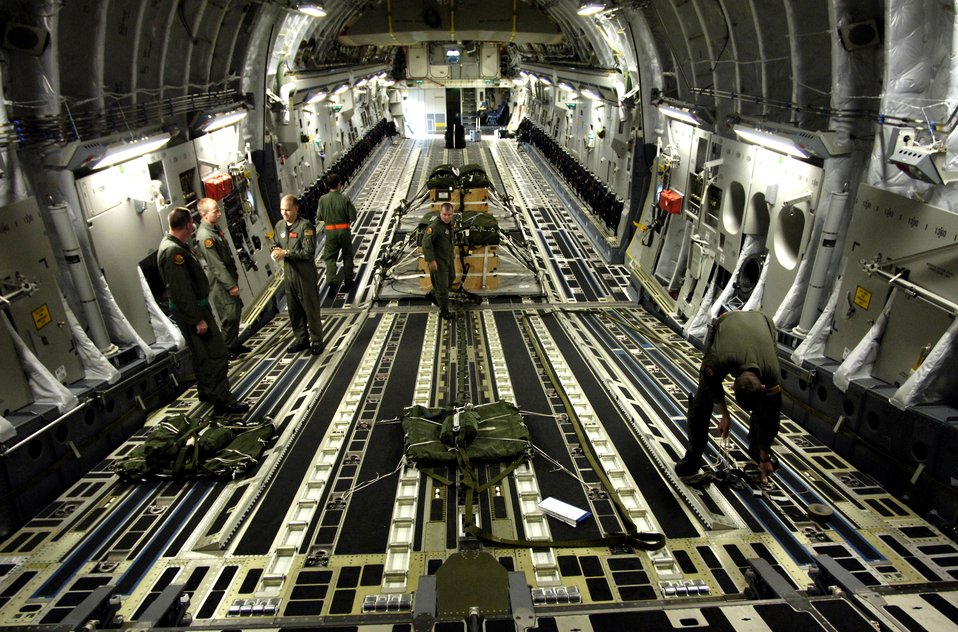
C-17 airdrop training mission

C-17 Globemaster III aircrew members prepare the rigging for parachutes for an upcoming airdrop training mission May 16, 2006, at Hickam Air Force Base, Hawaii. The aircrew members are from the 535th Airlift Squadron. The training provides multi-element training for the pilots enables users to get larger amounts of equipment in a short period of time and maintains aircrew proficiency.